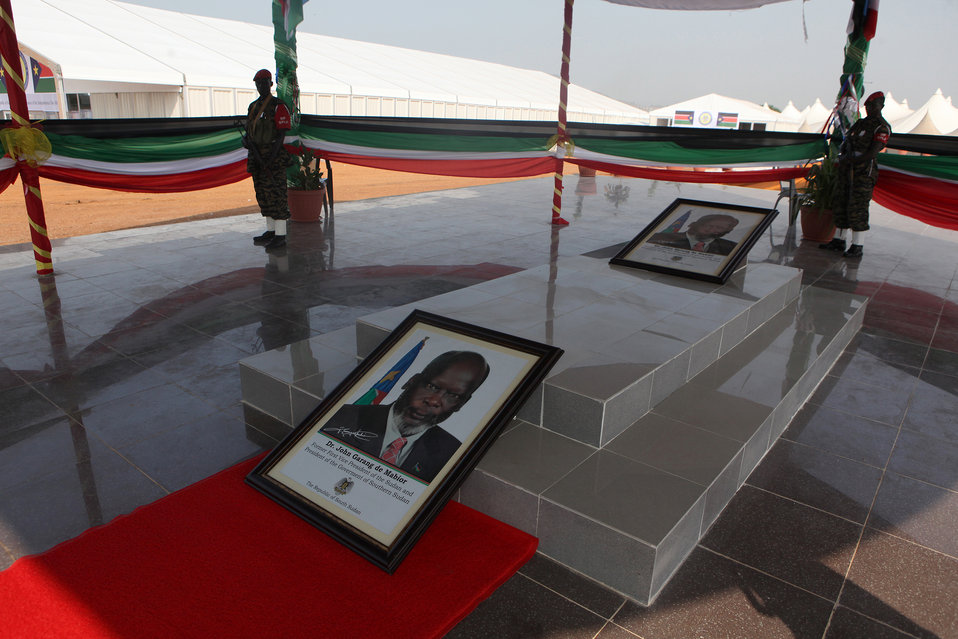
South Sudan Independence Day

Dr. John Garang's memorial site in Juba, South Sudan on July 9, 2011.